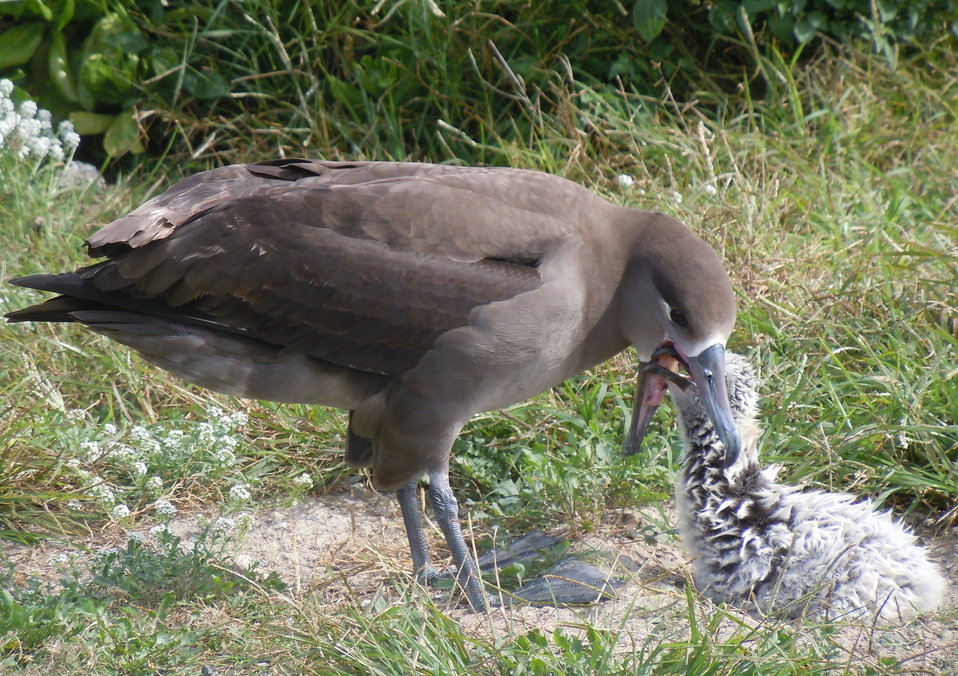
black-footed albatross feeds chick

Midway Atoll National Wildlife Refuge
March 2012